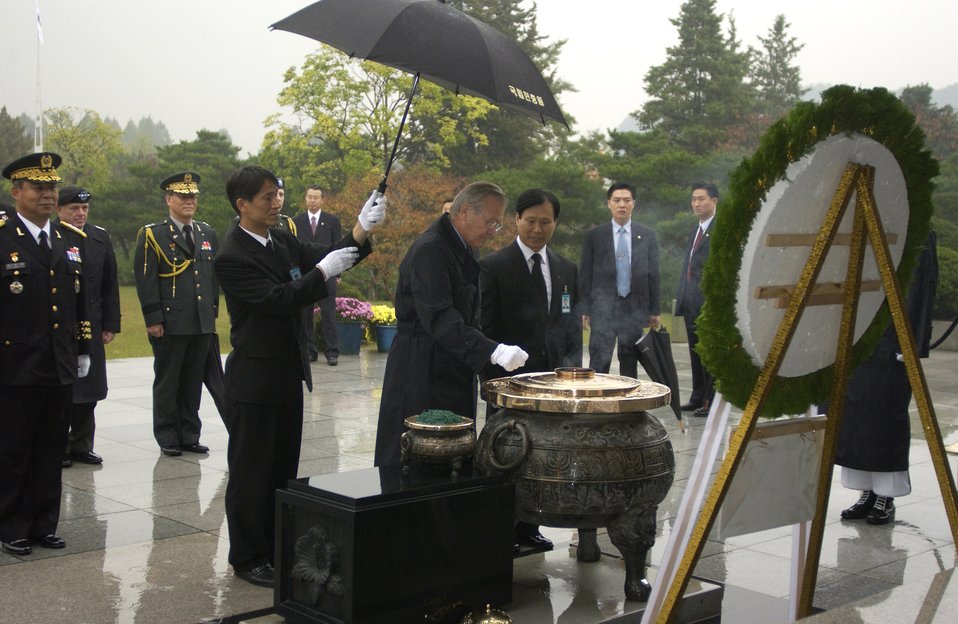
Visit to Korea

SEOUL, South Korea -- Secretary of Defense Donald H. Rumsfeld takes part in a wreath laying ceremony at the National Cemetery here. The secretary was here Oct. 21, to meet to meet with South Korean Minister of National Defense Yoon Kwang-ung. Secretary Rumsfeld also conducted the 37th United States and Republic of Korea Security Consultative Meeting to discuss defense policy issues and the future of the two nations' alliance.